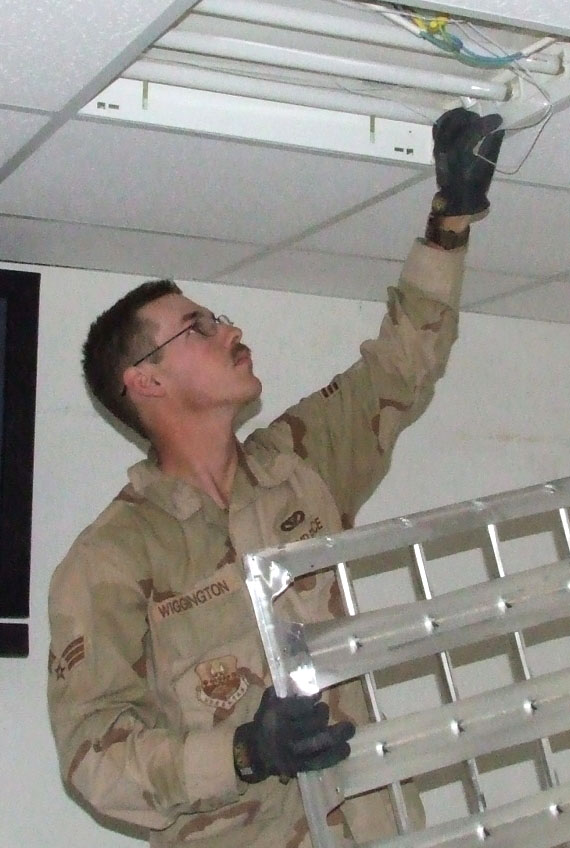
Prime BEEF on the menu at contingency base

Senior Airman Ray Wiggington installs light fixtures in a building being renovated at Contingency Operating Base Speicher, Iraq. Airman Wiggington, assigned to Detachment 10 of the 732nd Expeditionary Civil Engineer Squadron, is deployed to Speicher from Ellsworth Air Force Base, S.D.